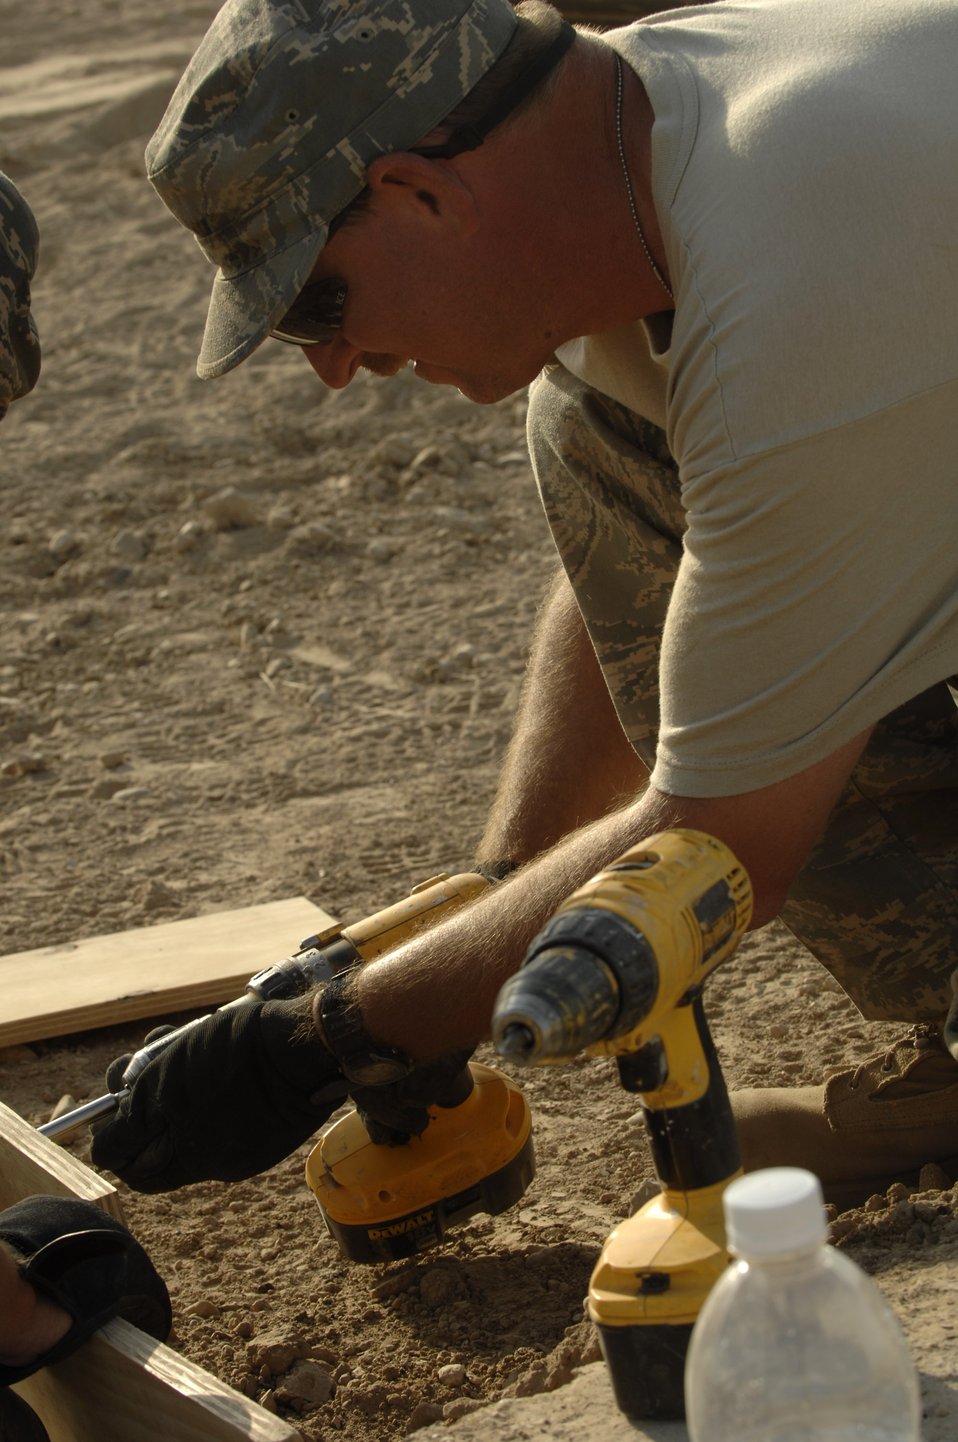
Down and Dirty

Staff Sgt. Amos Greer fastens wooden forms together Oct. 3 that will be used for the concrete footers for sun shades being installed on the Ali Base, Iraq, flightline. Sergeant Greer and other Airmen in the 407th Civil Engineer Squadron are working around the clock to build the sun shades by November.